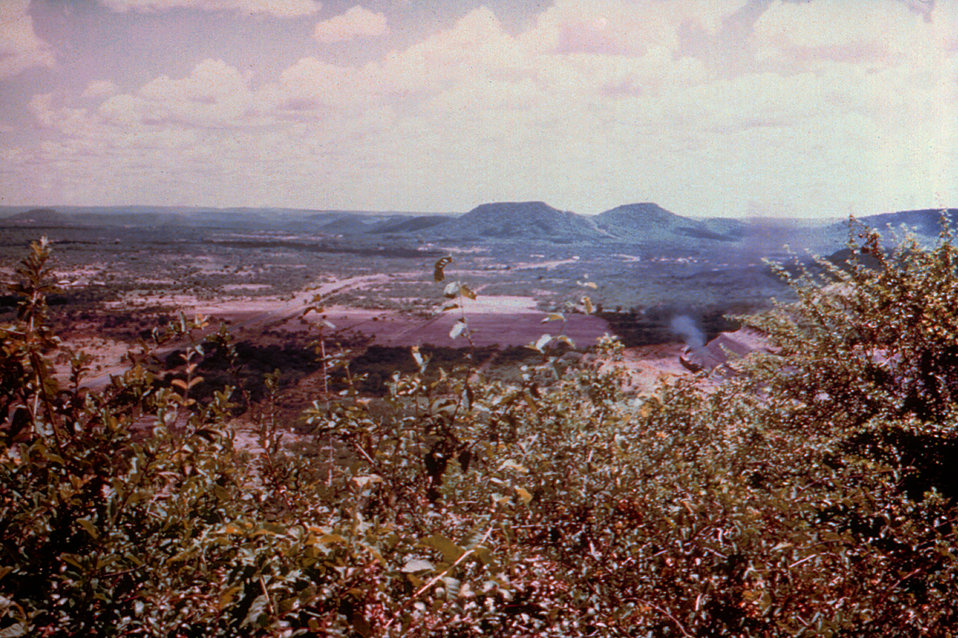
This view overlooks a Wankie, Rhodesian, now Zimbabwe, colliery where a small hospital and outpatient clinics are located.